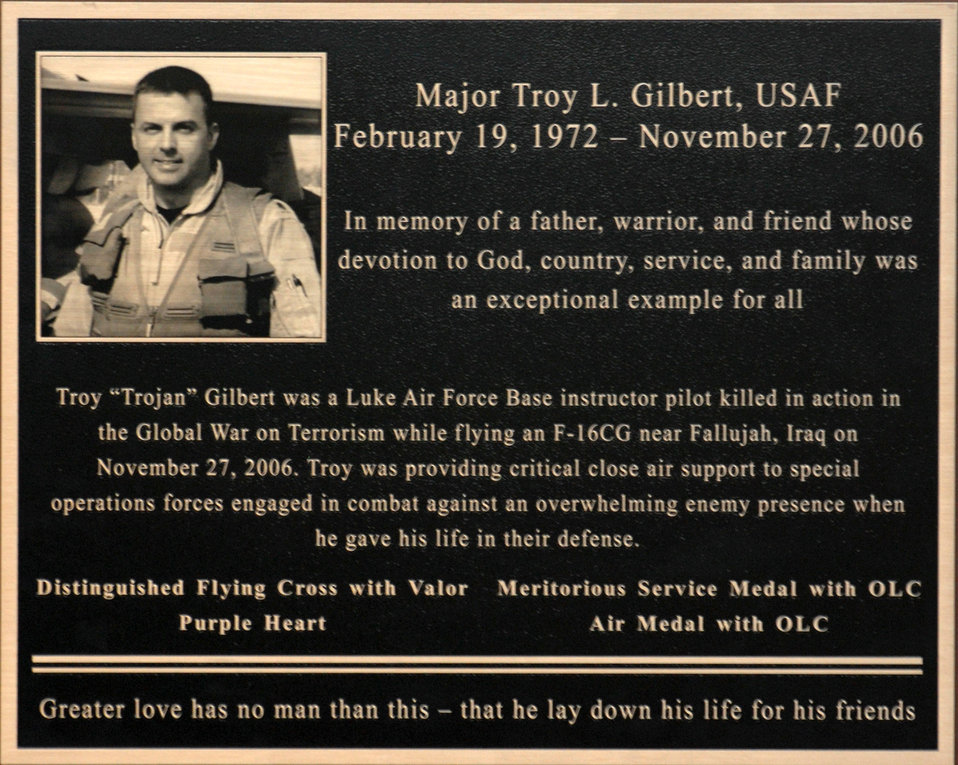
Luke officials dedicate bridge to pilot killed in Iraq

The Litchfield overpass was dedicated to Maj. Troy L. Gilbert Jan. 25 at Luke Air Force Base, Ariz. Major Gilbert was killed in Baghdad Nov. 27, 2006. After 14 months of construction, people at Luke AFB can get from one side of the base to the other without ever leaving a gate, now that base officials have opened the overpass crossing Litchfield Road.